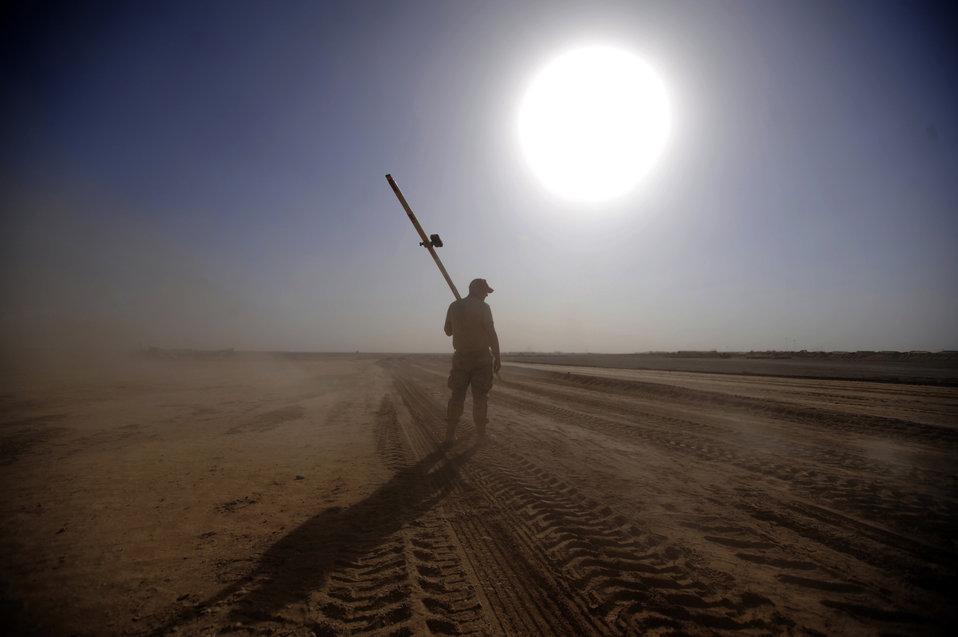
From dirt to runway, the RED HORSE way

Airman 1st Class Davis Smith carries a guide used in airfield construction Sept. 9, 2009, at Forward Operating Base Dwyer, Afghanistan. He is part of a team preparing the area for a runway that will allow C-17 Globemaster IIIs to deliver cargo and people directly to FOB Dwyer. Airman Smith is assigned to the 1st Expeditionary RED HORSE Group and is deployed from Malmstrom Air Force Base, Mont.